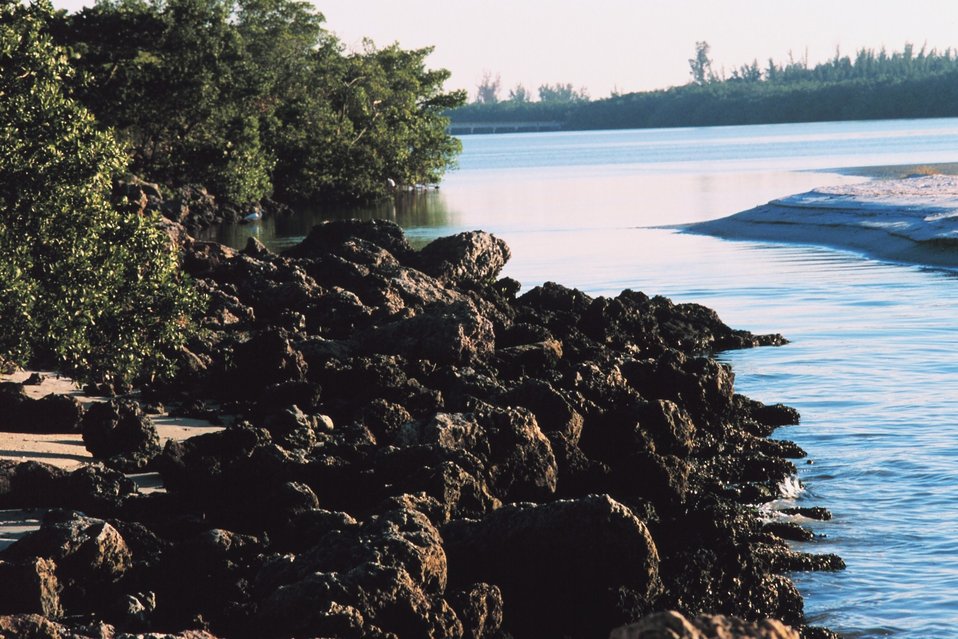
Lovers Key State Recreational Area